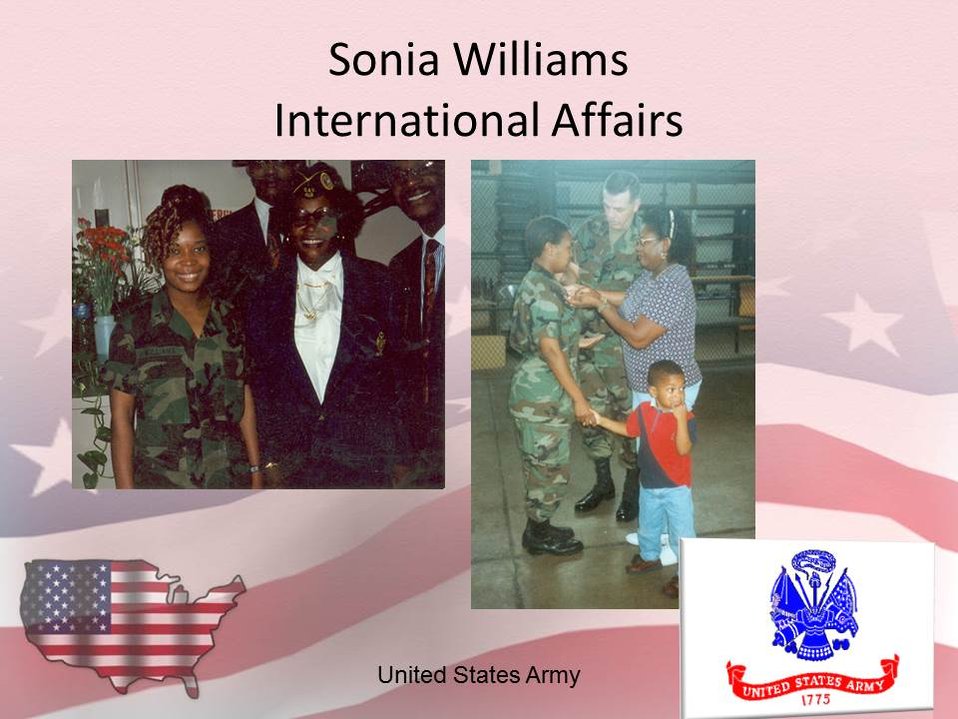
Sonia Williams